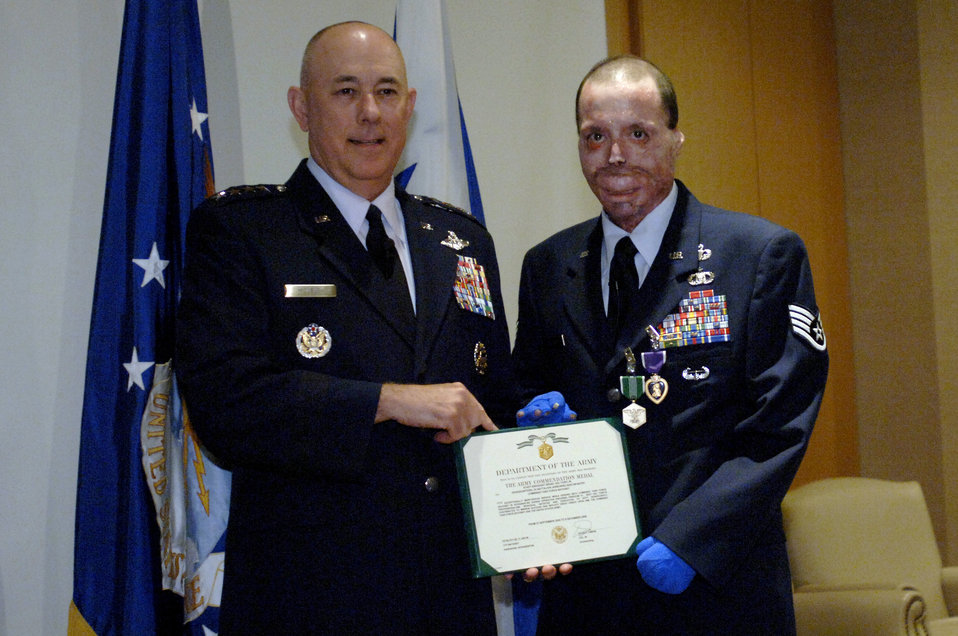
Purple Heart Presentation

Staff Sgt. Israel del Toro receives the Purple Heart Medal from Air Force Chief of Staff Gen. T. Michael Moseley today at Fort Sam Houston, Texas. Sergeant del Toro was wounded during combat action in Afghanistan in December 2005 while supporting Operation Enduring Freedom.